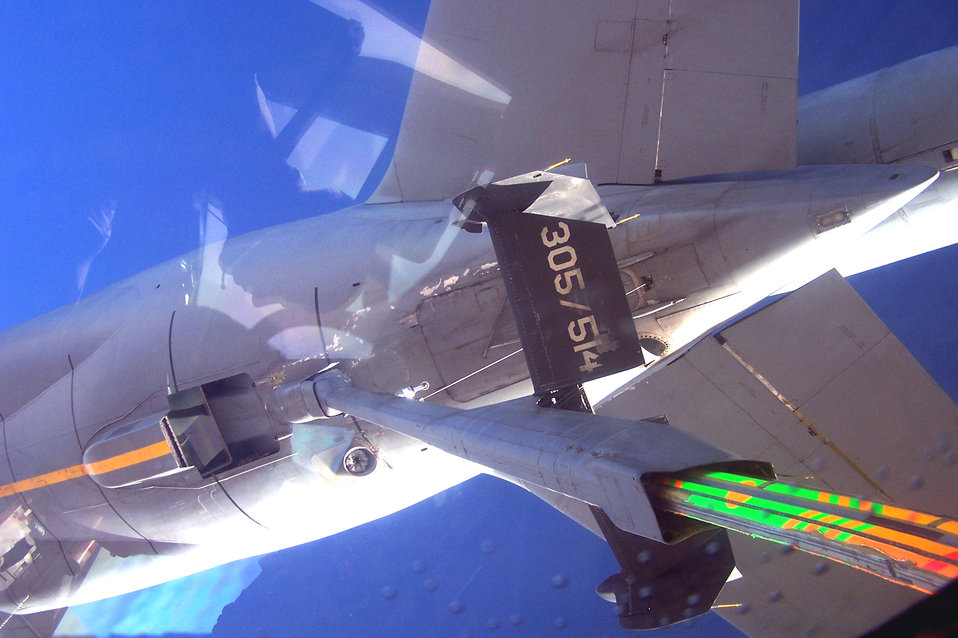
Filling up on freedom

A KC-10 Extender connects to a second KC-10 Oct. 17 over Iraq. The refueling maneuver allowed the connecting KC-10 from the 380th Air Expeditionary Wing to offload more fuel for coalition aircraft missions in the area. A KC-10 can carry as much as 55,385 gallons of fuel . The 380th AEW is the largest air refueling wing in Southwest Asia flying both KC-10s and KC-135 Stratotankers under the 908th Expeditionary Air Refueling Squadron missions.